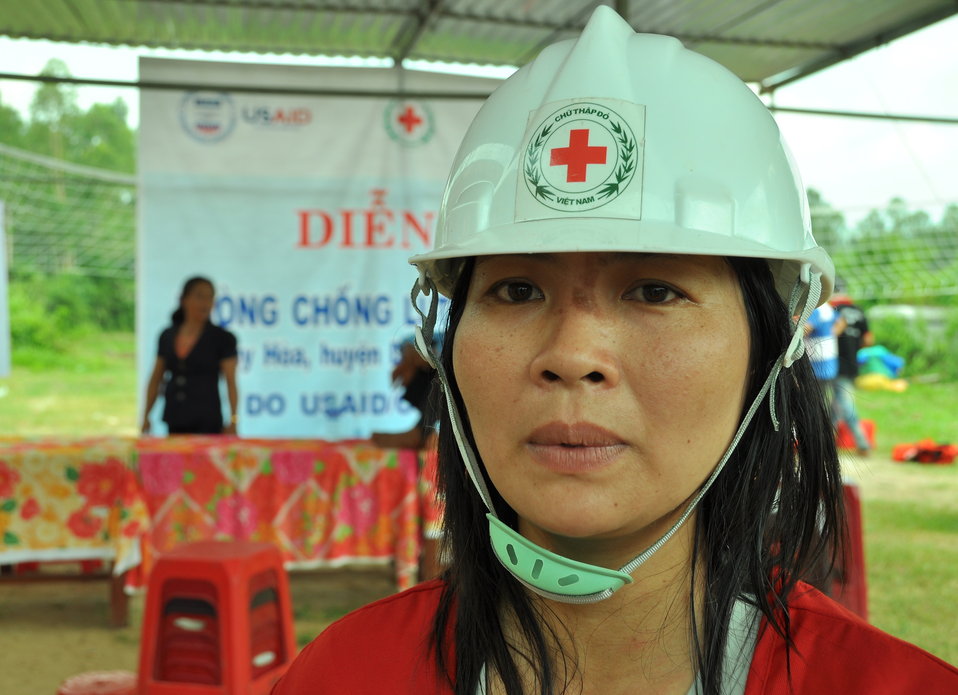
USAID, Red Cross Support Disaster Response Drill in Duy Hoa Commune, Quang Nam Province

Tao Thi My Hanh, emergency response instructor at Duy Hoa Commune, Quang Nam Province
December 5, 2012